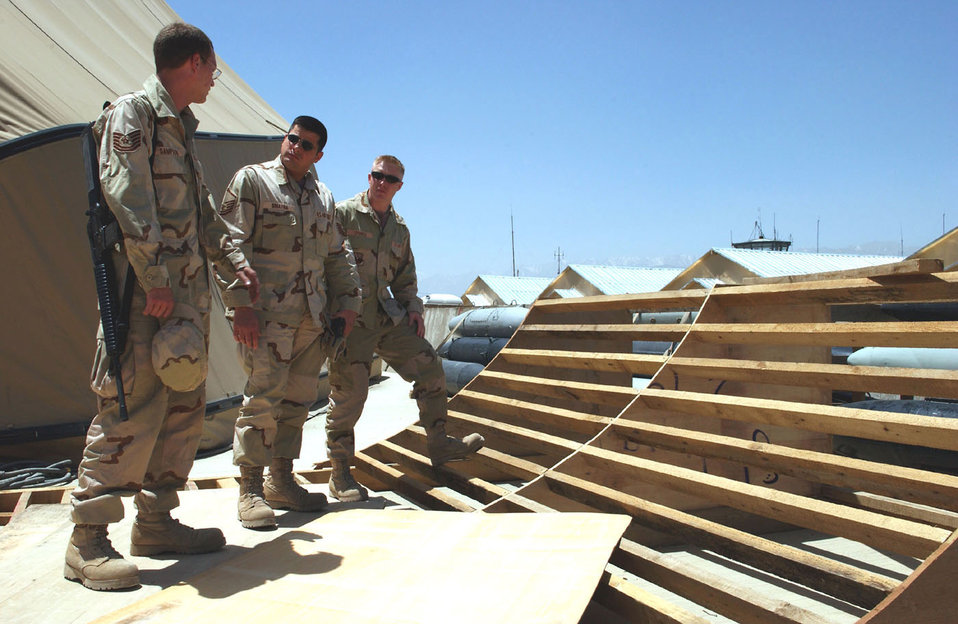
Keeping safety a priority

BAGRAM AIR BASE, Afghanistan -- (From left) Tech. Sgt. Michael Sampson talks with Master Sgt. Steve Sinatra and Staff Sgt. Aaron Spanier about a skateboard ramp that Sergeant Sampson and others are building. Sergeant Sampson is assigned to the 455th Expeditionary Aircraft Maintenance Squadron. Sergeants Sinatra and Spanier are both assigned to the 455th Air Expeditionary Wing's safety office.